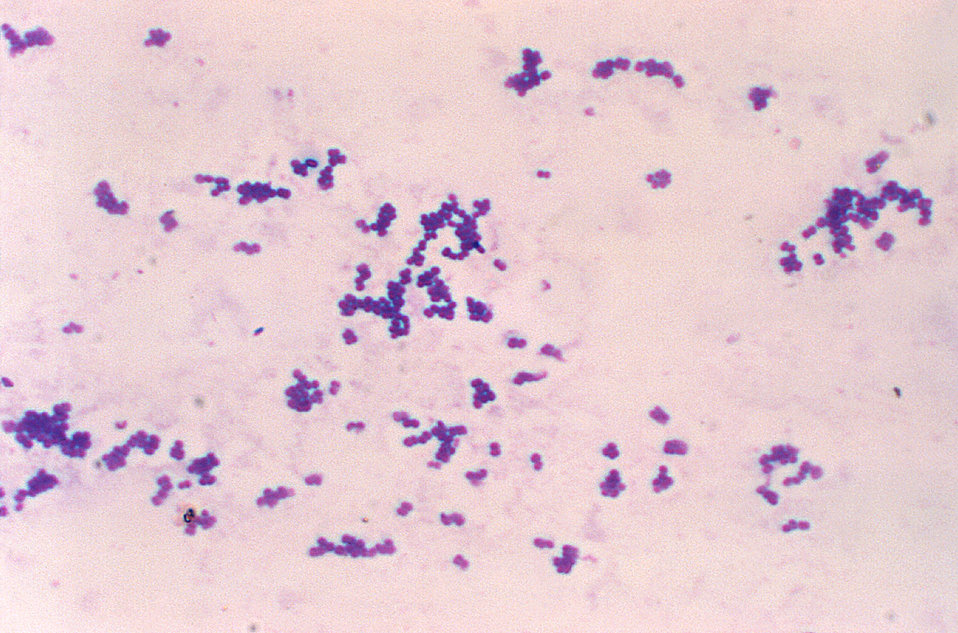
Aerococcus species. Gram stain.